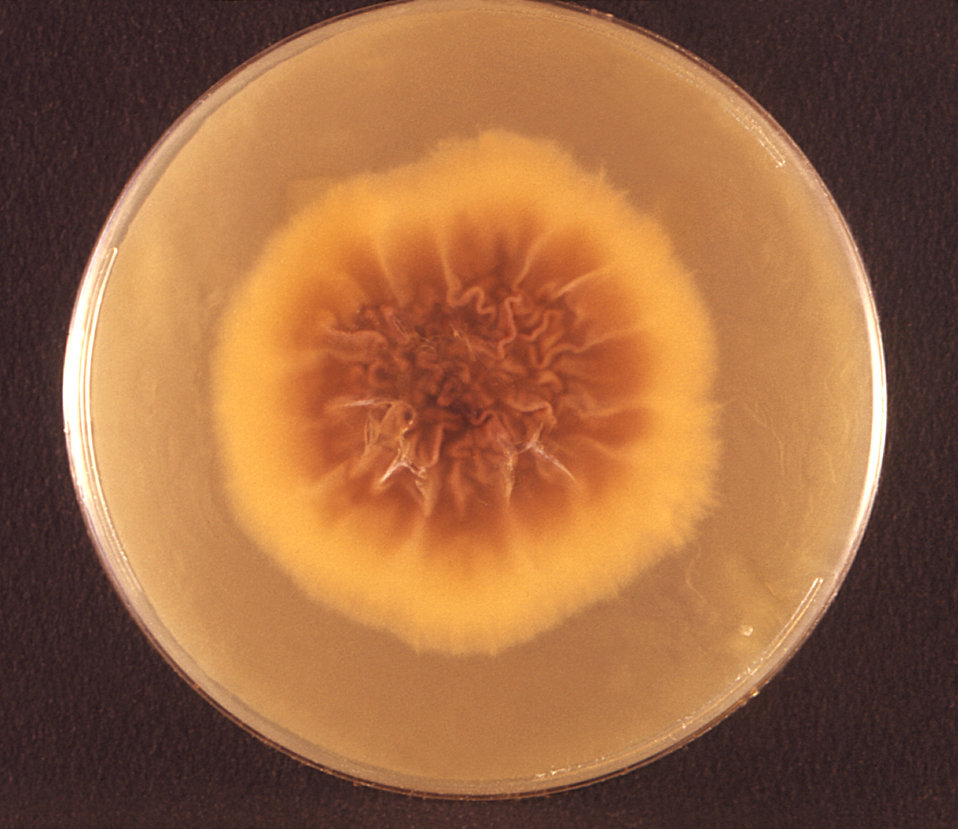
This photograph depicts the reverse view of a Petri dish within which fungal colonies of Trichophyton rubrum var. granulare had been cultured. From the front, (see PHIL 10540) the colonial morphology, which in the case of T. rubrum is said to be waxy, glaborous, i.e., flat to cottony, and display from a frontal perspective, a white to bright yellowish-beige, and even a red-violet coloration. From this reverse view, the colonies display a coloration that is a light yellowish to brown, or a reddish brown.